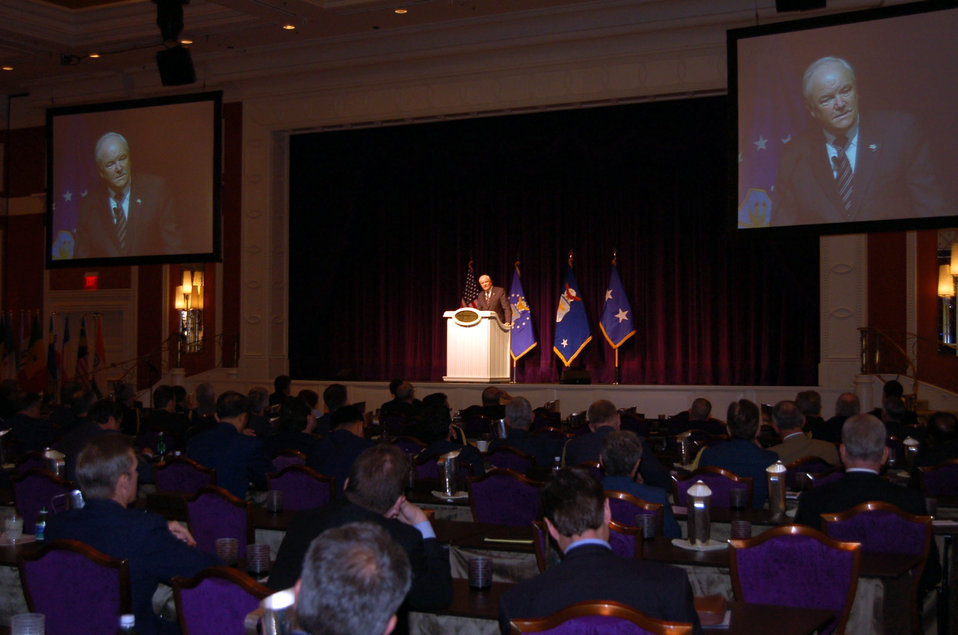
Secretary Wynne speaks at symposium in Las Vegas

Secretary of the Air Force Michael W. Wynne delivers his keynote speech to a crowd of more than 300 people during the 2007 Air and Space Leaders symposium at the Wynn Hotel and resort Nov. 8 in Las Vegas. The crowd included military members from several different nations and civilian industry leaders. The symposium was held in conjunction with the Heritage to Horizons event, which is a celebration of the Air Force's 60th anniversary.